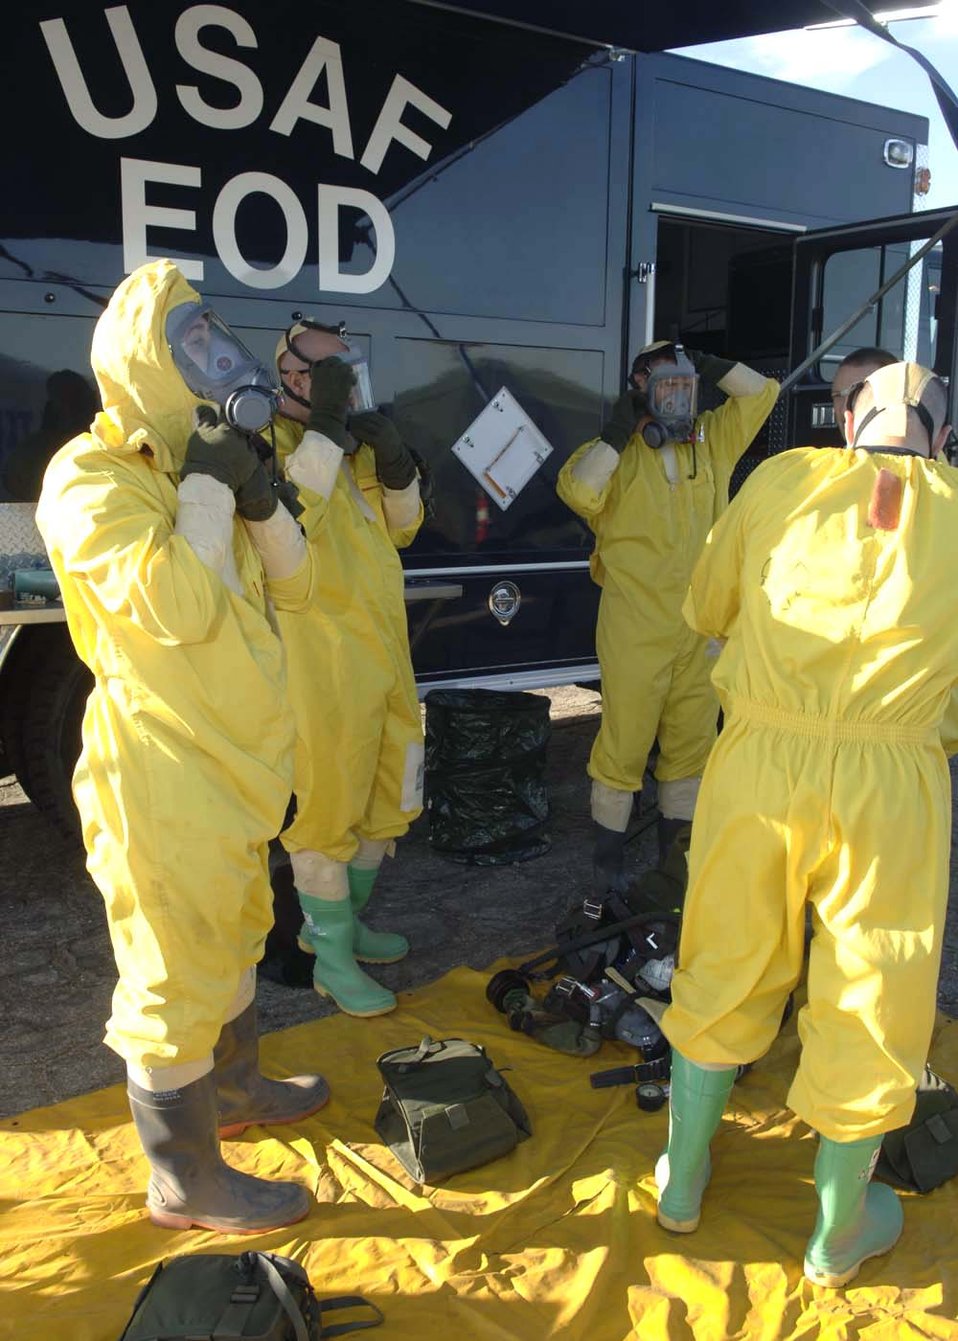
Training to fight fires together

Airman from the explosive ordnance disposal team prepare their masks and radiological suits prior to the initial setup entry procedures before going to search the wreakage of a simulated aircraft accident Dec. 4 at Davis-Monthan AFB, Ariz. Exercise Vigilant Shield 07 is a joint Department of Defense and federal nuclear weapon accident exercise. The exercise scenario involved a C-17 Globemaster III carrying four nuclear weapons to be diverted to Davis-Monthan AFB due to simulated engine failure that caused an aircraft accident. Sergeant Swann is an explosive ordnance disposal journeyman from the 355th Civil Engineering Squadron.